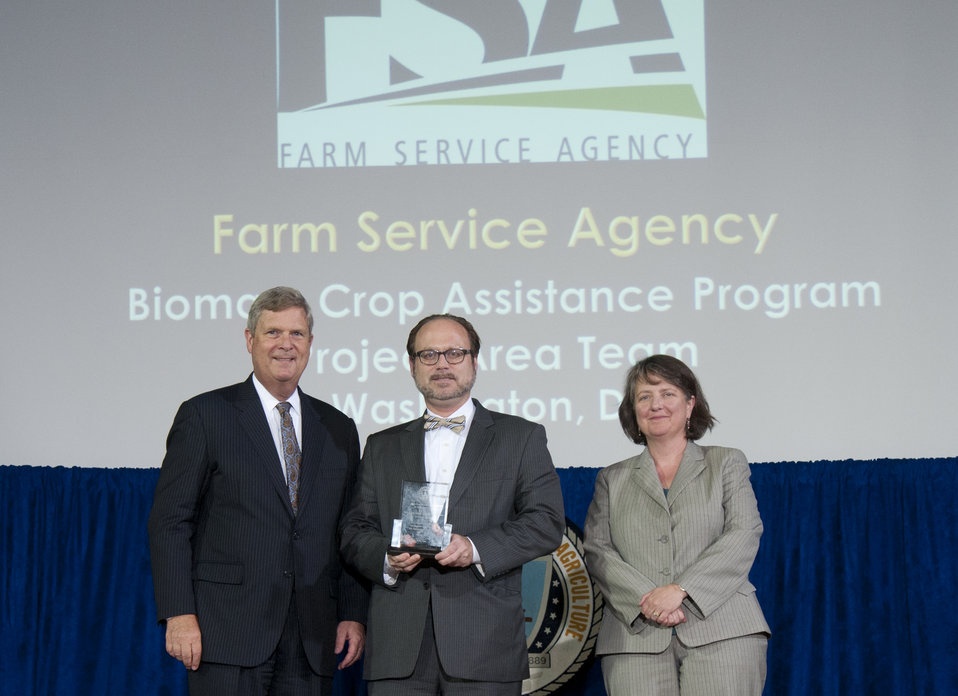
Agriculture Secretary Tom Vilsack and Agriculture Deputy Secretary Kathleen Merrigan present the Secretary’s Honor Award to Biomass Crop Assistance Program Project Area Team Farm Service Agency (FSA) group leader Todd H. Atkinson at the U.S. Department of Agriculture (USDA) 64th Annual Honor Awards Ceremony in Washington, D.C. on Wednesday, Sept. 12, 2012. Biomass Crop Assistance Program Project Area Team enhanced rural prosperity by reviewing 40 project proposals and funding four projects under the Biomass Crop Assistance Program.